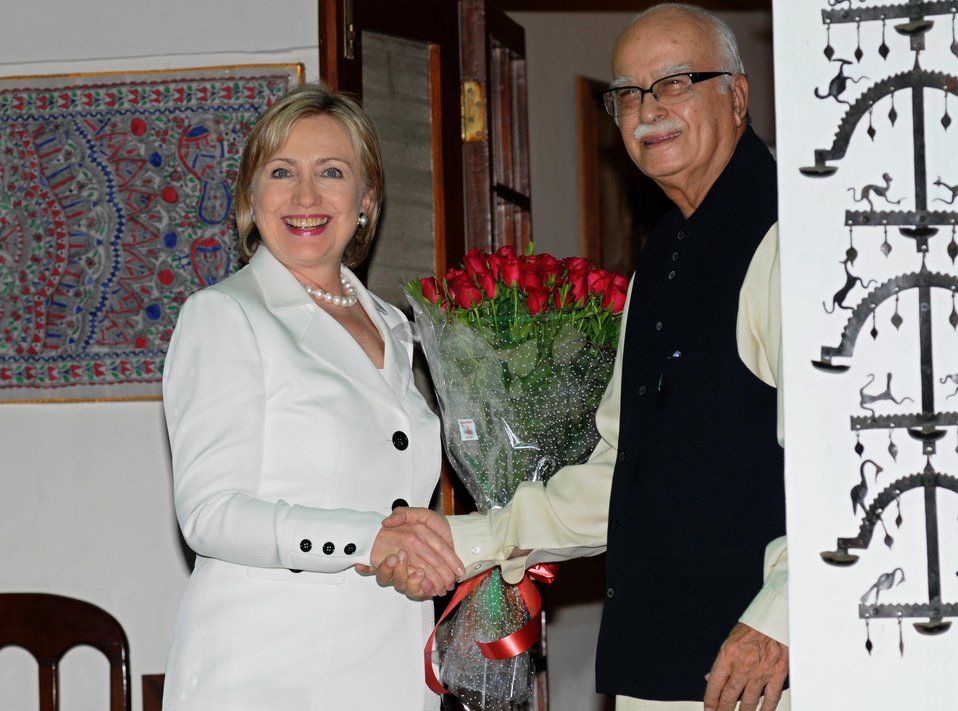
Secretary Clinton Meets With Indian Opposition Leader

Leader of the Opposition L.K. Advani greets U.S. Secretary of State Hillary Rodham Clinton outside of his residence in New Delhi, India July 20, 2009